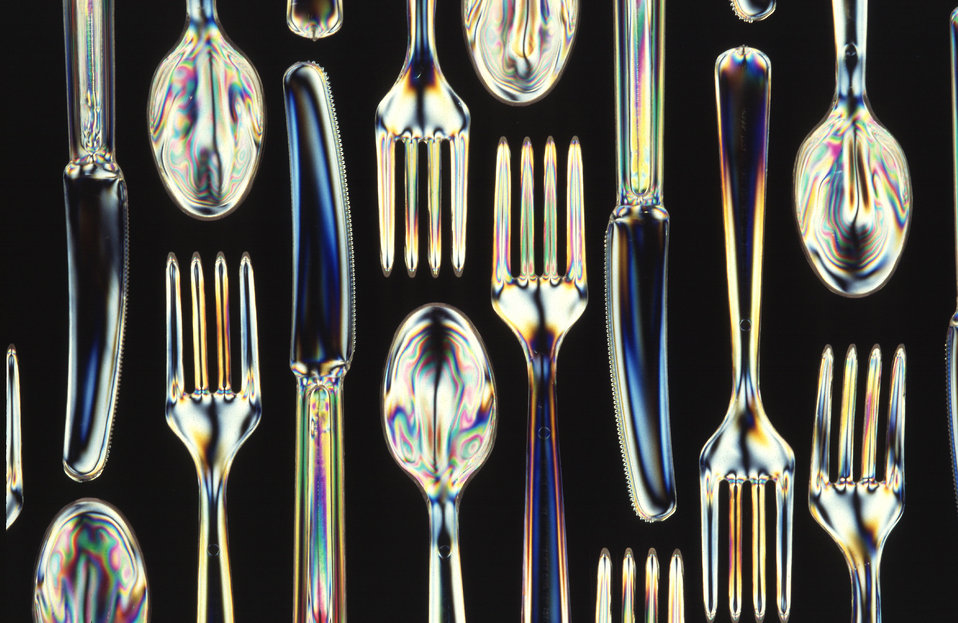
Petroleum-based plastics now make up about 25 percent of the volume of landfills. But knives, forks, and spoons made from a starch-polyester material won't contribute to the problem, thanks to the U.S. Department of Agriculture (USDA) Agriculture Research Service (ARS) innovation. Various biodegradable starch-polyester compositions can be used for other one-time-use items such as plastic bags and wraps that are now made from petroleum.